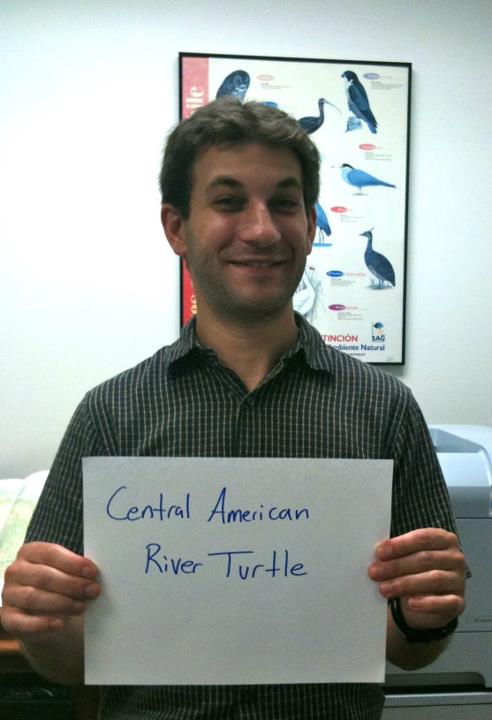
Jonathan Kolby, 'Central American River Turtle,'

International Affairs participates in FFI's In Our Hands campaign